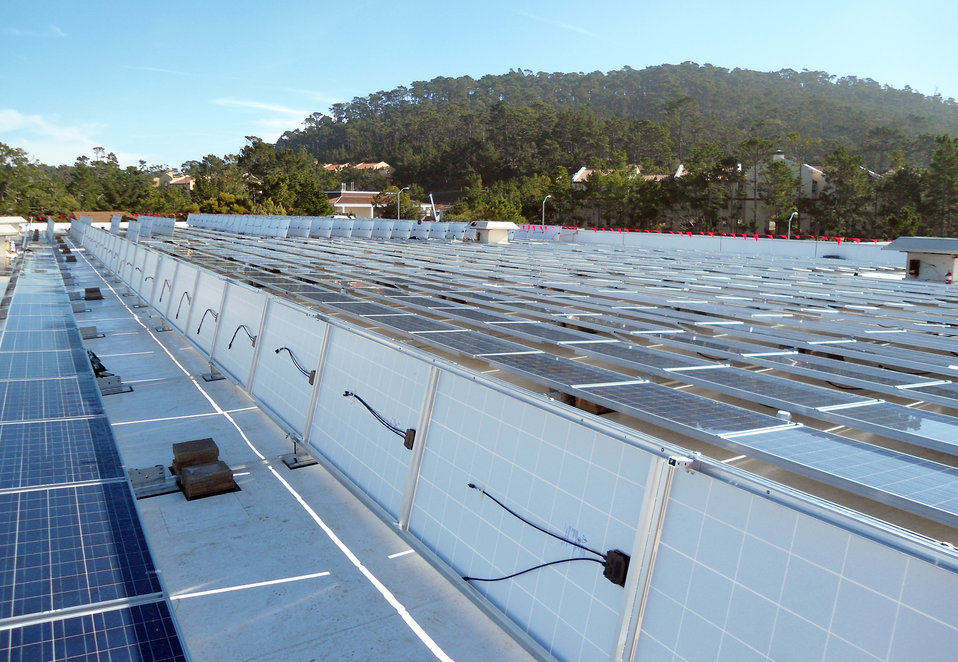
Solar panels at Presidio of Monterey

Nearly 2,000 panels sit atop the post gymnasium at Presidio of Monterey in Monterey, Calif., shown January 26, 2012. The U.S. Army Corps of Engineers Sacramento District oversaw placement of the panels, completed in early April 2012 and part of a $2 million project to provide up to an estimated 660,000 kilowatts of power a year.